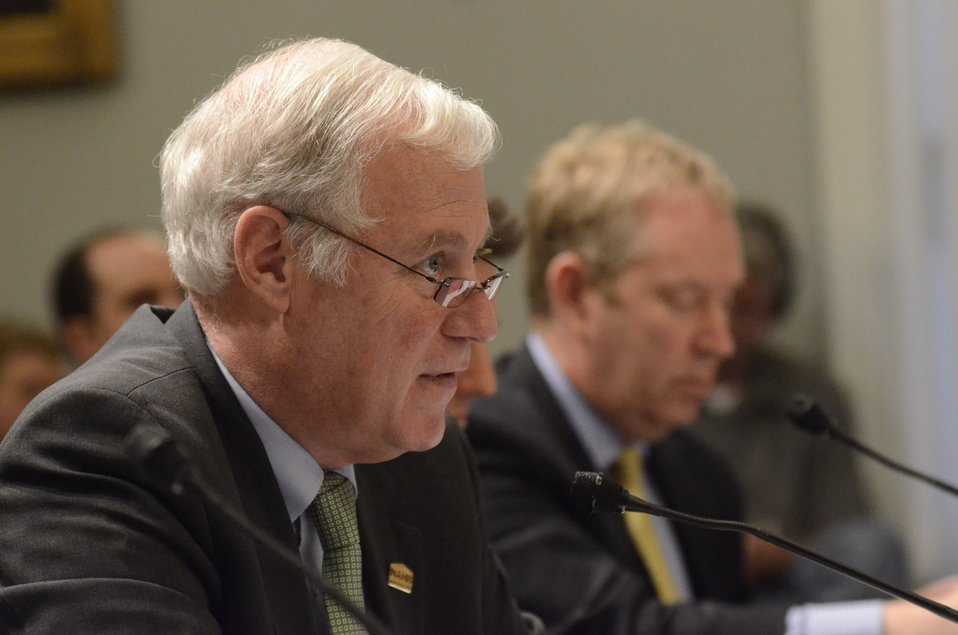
Chairman of the Board National Association of Home Builders Barry Rutenberg testifies on Retailers & Entertainers Lacey Implementation & Enforcement Fairness Act & Freedom from Over-Criminalization & Unjust Seizures Act at the Longworth House Office Building in Washington, D.C. on Tuesday, May 8, 2012.